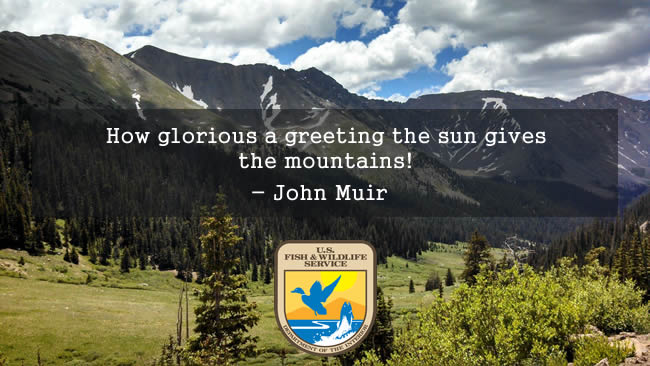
Glorious Greeting